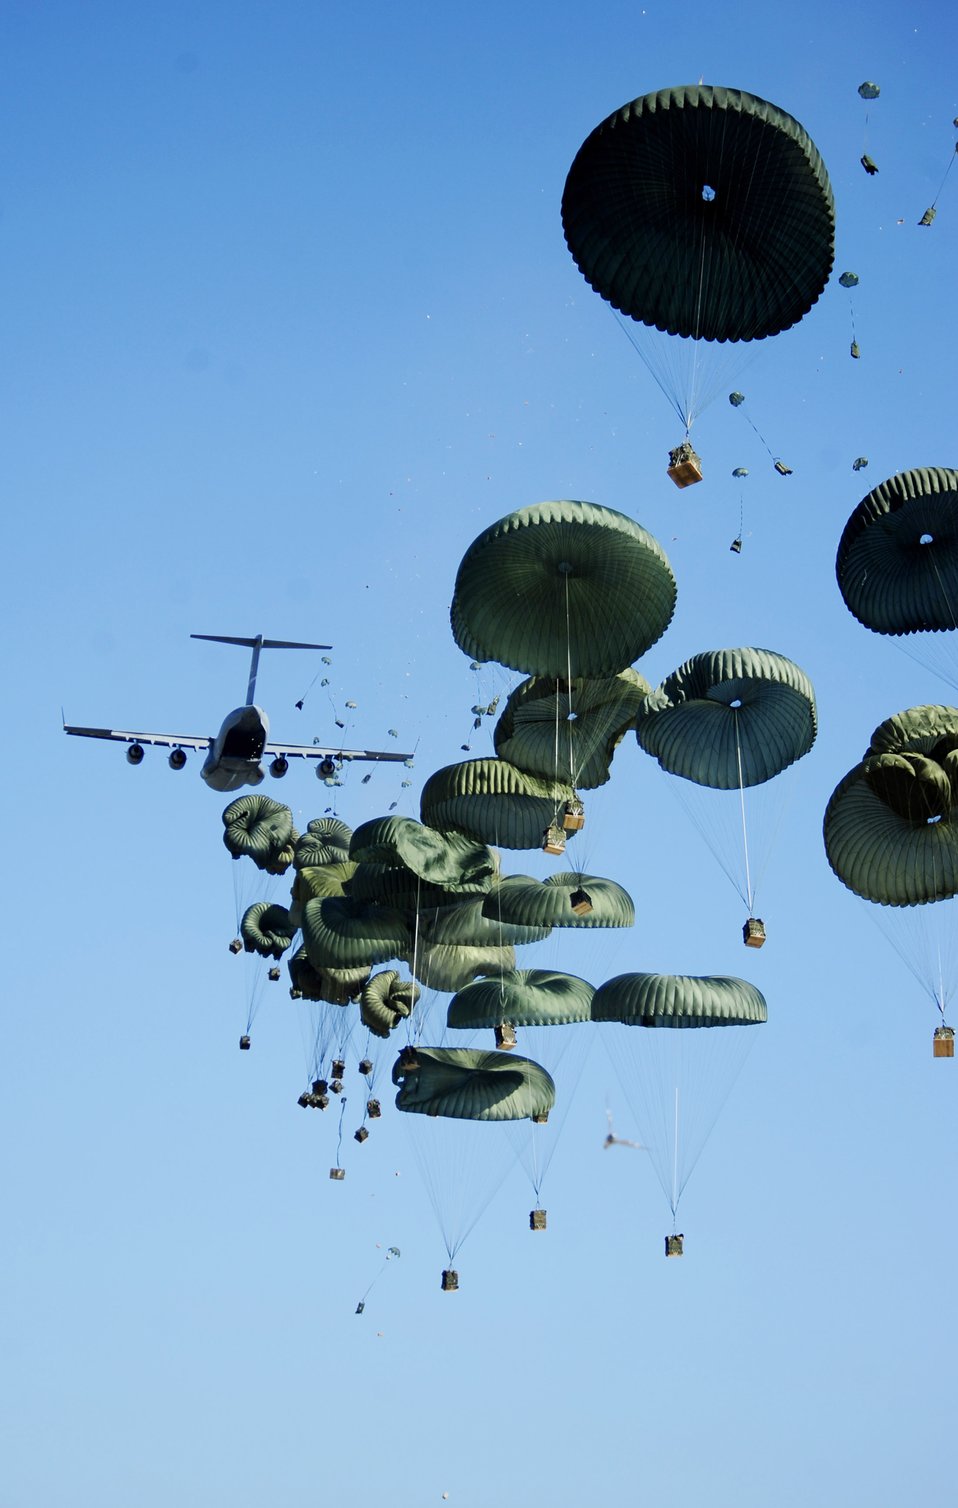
A flurry of supplies

A C-17 Globemaster III delivers humanitarian aid into the outskirts of Port-au-Prince, Haiti, Jan. 18, 2010.